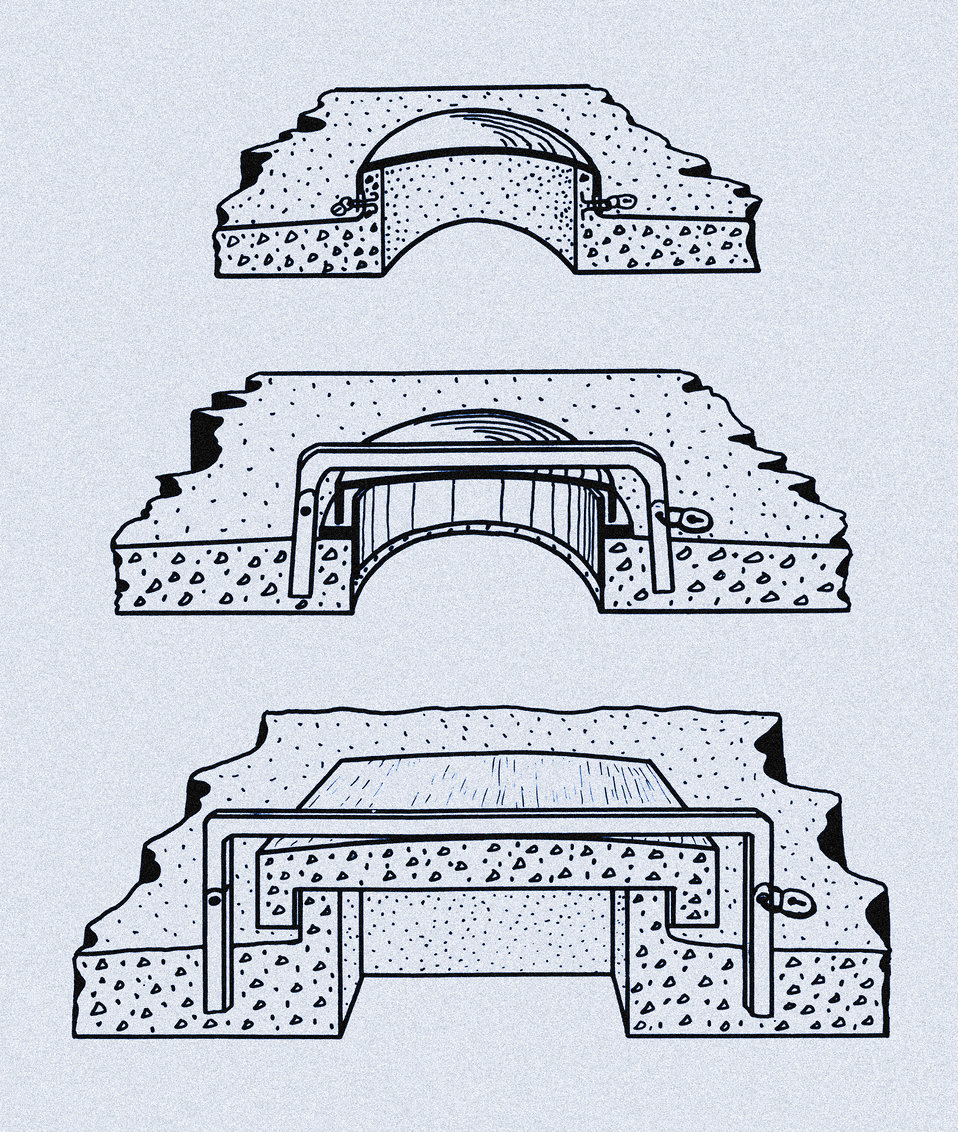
This historic 1935 diagram, which had been digitally enhanced and colorized, depicted three renderings of properly constructed manhole covers of the 'overlapping' type. Manhole covers were found to be quite important to maintaining safe and secure sanitation systems.